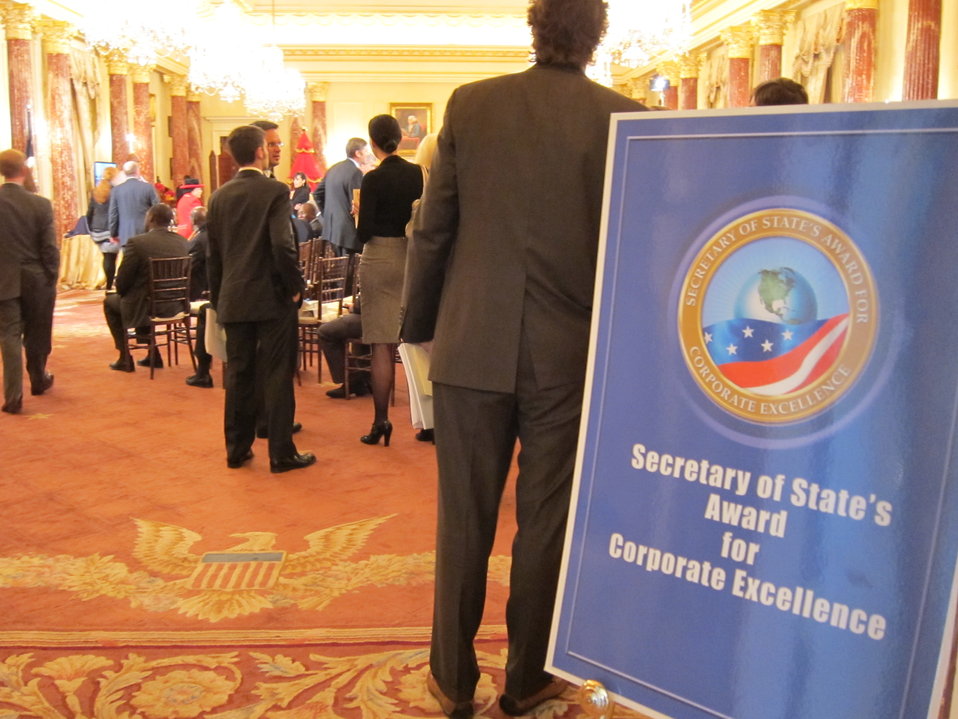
Individuals Arrive at the Secretary's ACE Award Ceremony

Individuals arrive at the Secretary of State's Award for Corporate Excellence (ACE) Ceremony at the U.S. Department of State in Washington, D.C., on December 17, 2010.